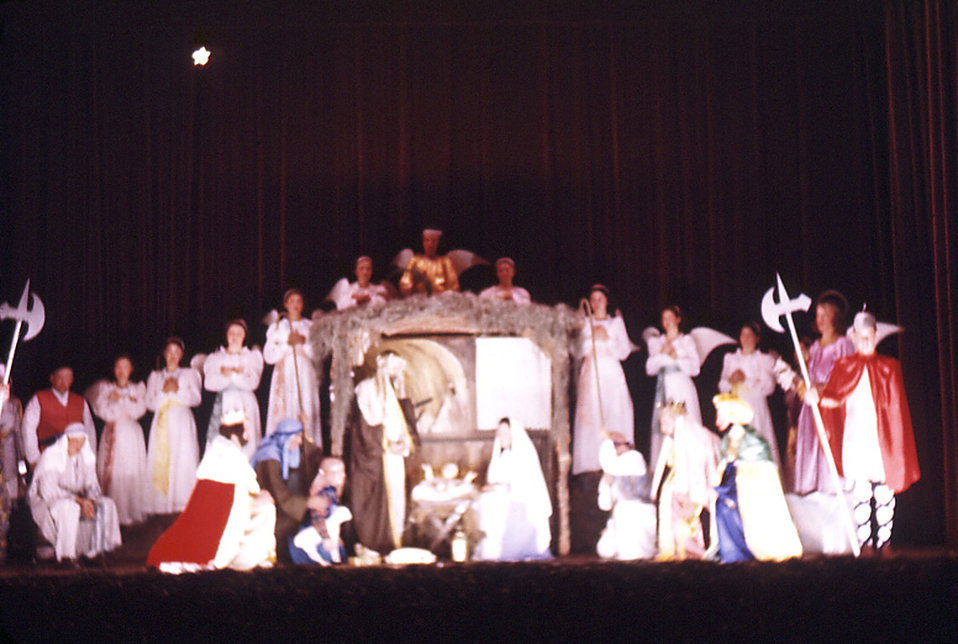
In this historic image, a scene from the Carville, Louisiana Leprosarium's "Annual Nativity Play" was depicted. The hospital's production was sponsored by the Sisters of Charity, and all the actors were patients staying at the facility. Due to the nature of patient quarantine, isolation from the general populous took a psychological toll on the patients, and participatory activities such as this Nativity Play, bolstered moral, and was quite an entertaining experience for all involved.